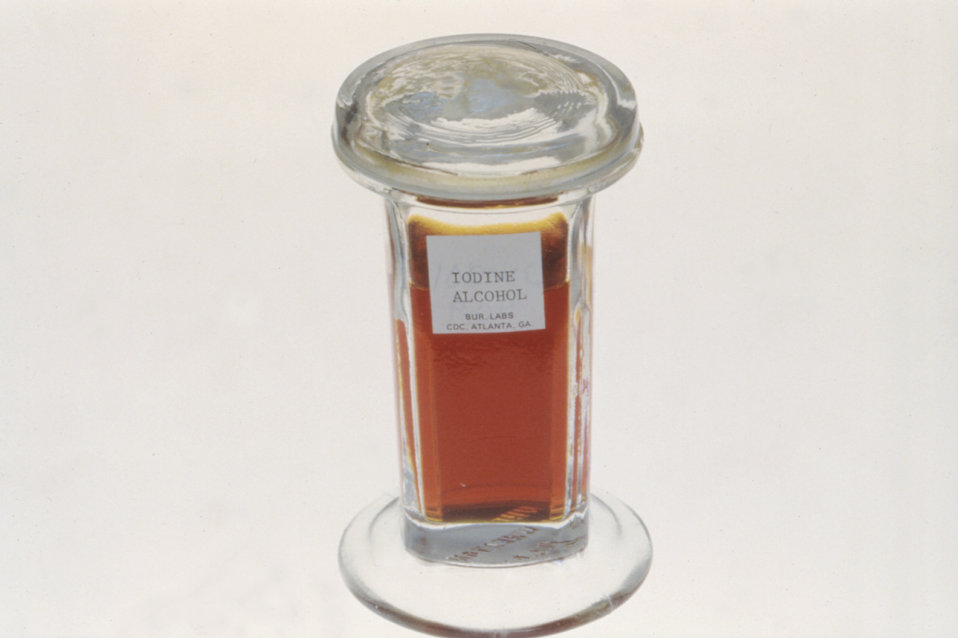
This is a Coplin jar containing iodine and alcohol.